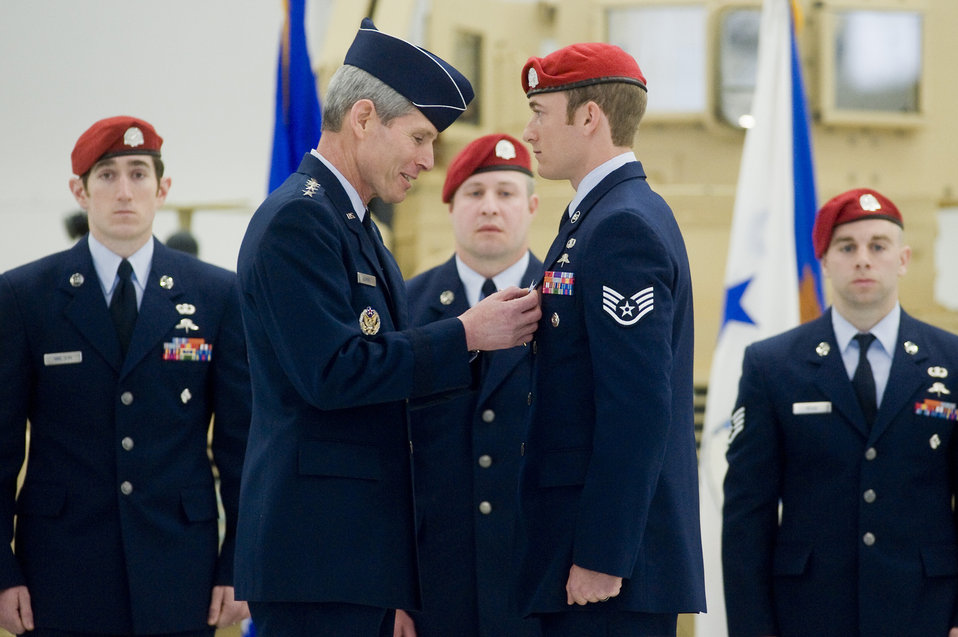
Combat controllers contributions honored in ceremony

Air Force Chief of Staff Gen. Norton Schwartz pins the Silver Star on Staff Sgt. Evan Jones during a medal ceremony April 29, 2010, at Joint Base Lewis-McChord, Wash. Sergeant Jones received both a Silver Star and a Bronze Star with
Valor for two separate incidents during a deployment to Afghanistan in 2008.